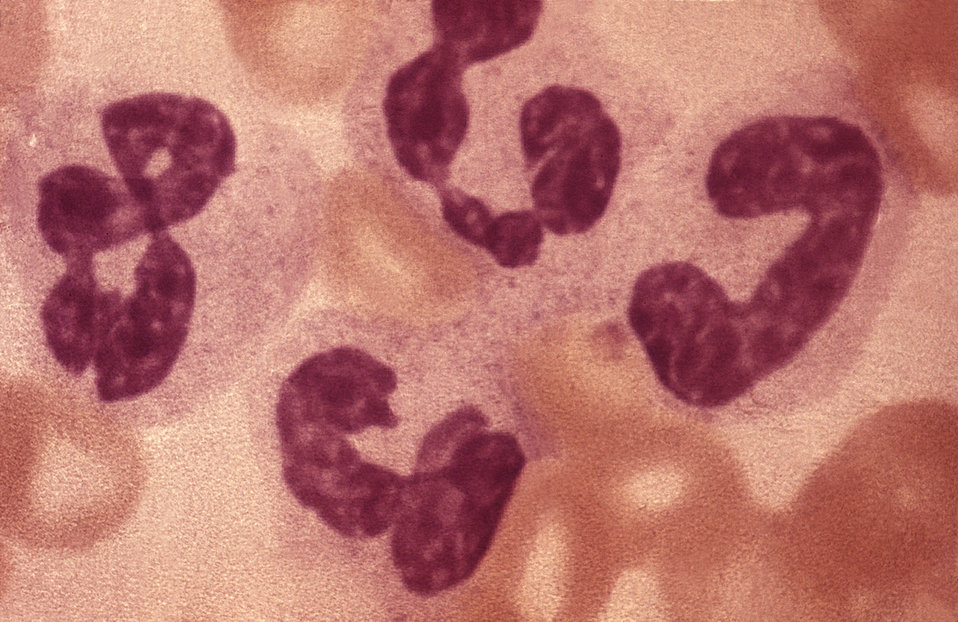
Known as leukocytosis, this micrograph depicts an elevated number of normal white blood cells.